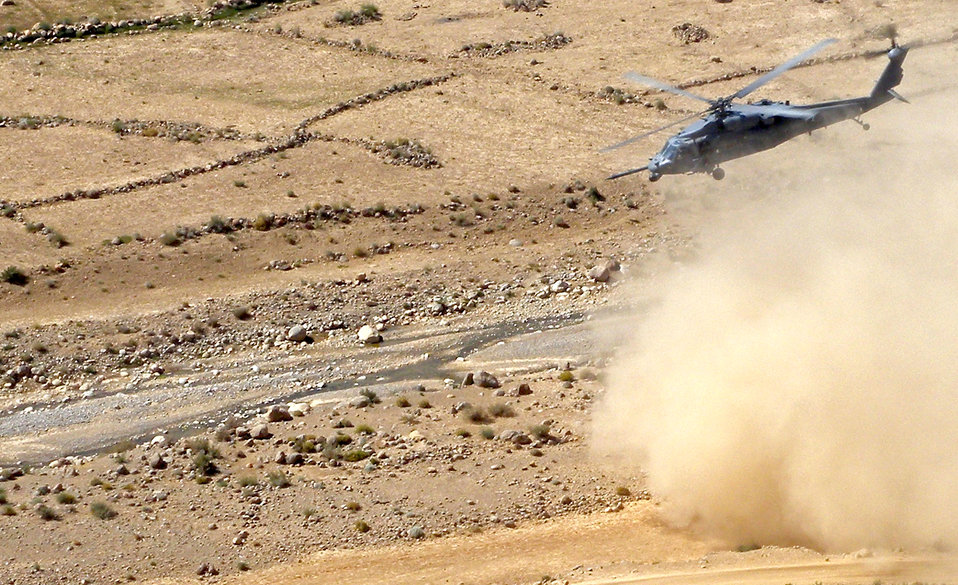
33rd Rescue Squadron crew earns MacKay Trophy

An HH-60G Pavehawk from the 129th Expeditionary Rescue Squadron flies June 12, 2009, over Afghanistan. The crew of